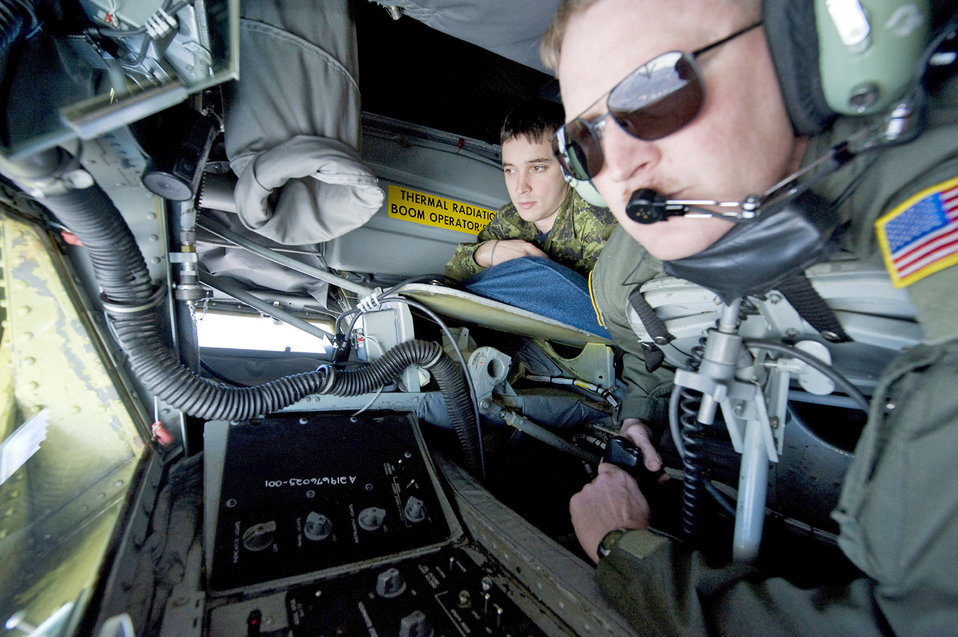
Airmen receive invaluable exerience while supporting Canadian military training

Master Sgt. Brian Quam prepares the boom on a KC-135 Stratotanker to refuel a C-17 Globemaster as Canadian Capt. Eric Rheaume (background) observes during an orientation flight March 17, 2010, at Altus Air Force Base, Okla. Captain Rheaume is a maintenance officer with the Canadian air force's 425th Tactical Fighter Squadron and Sergeant Quam is the NCO in charge of training for the 54th Air Refueling Squadron.